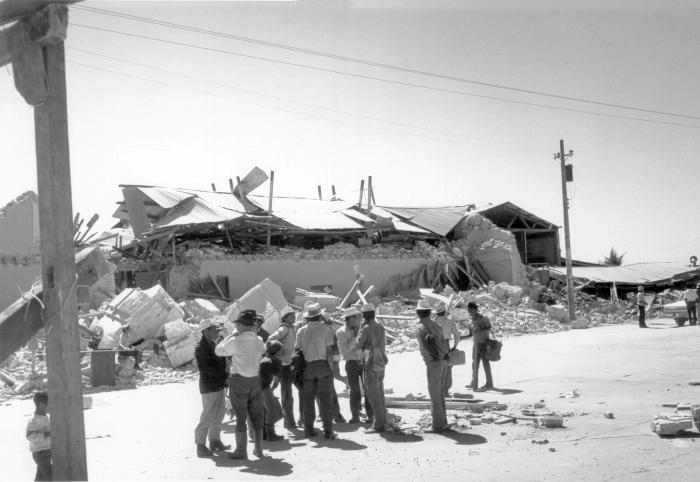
This image depicts the destruction that occurred in the Guatemalan town of Tecpan, due to a devastating earthquake in 1976.